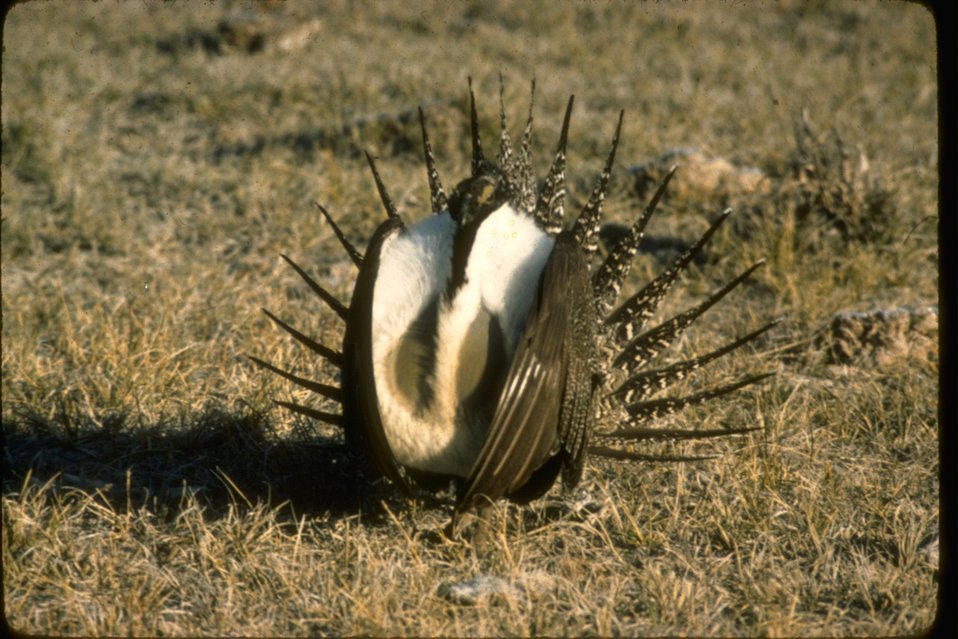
Sage Grouse strutting through the grass.